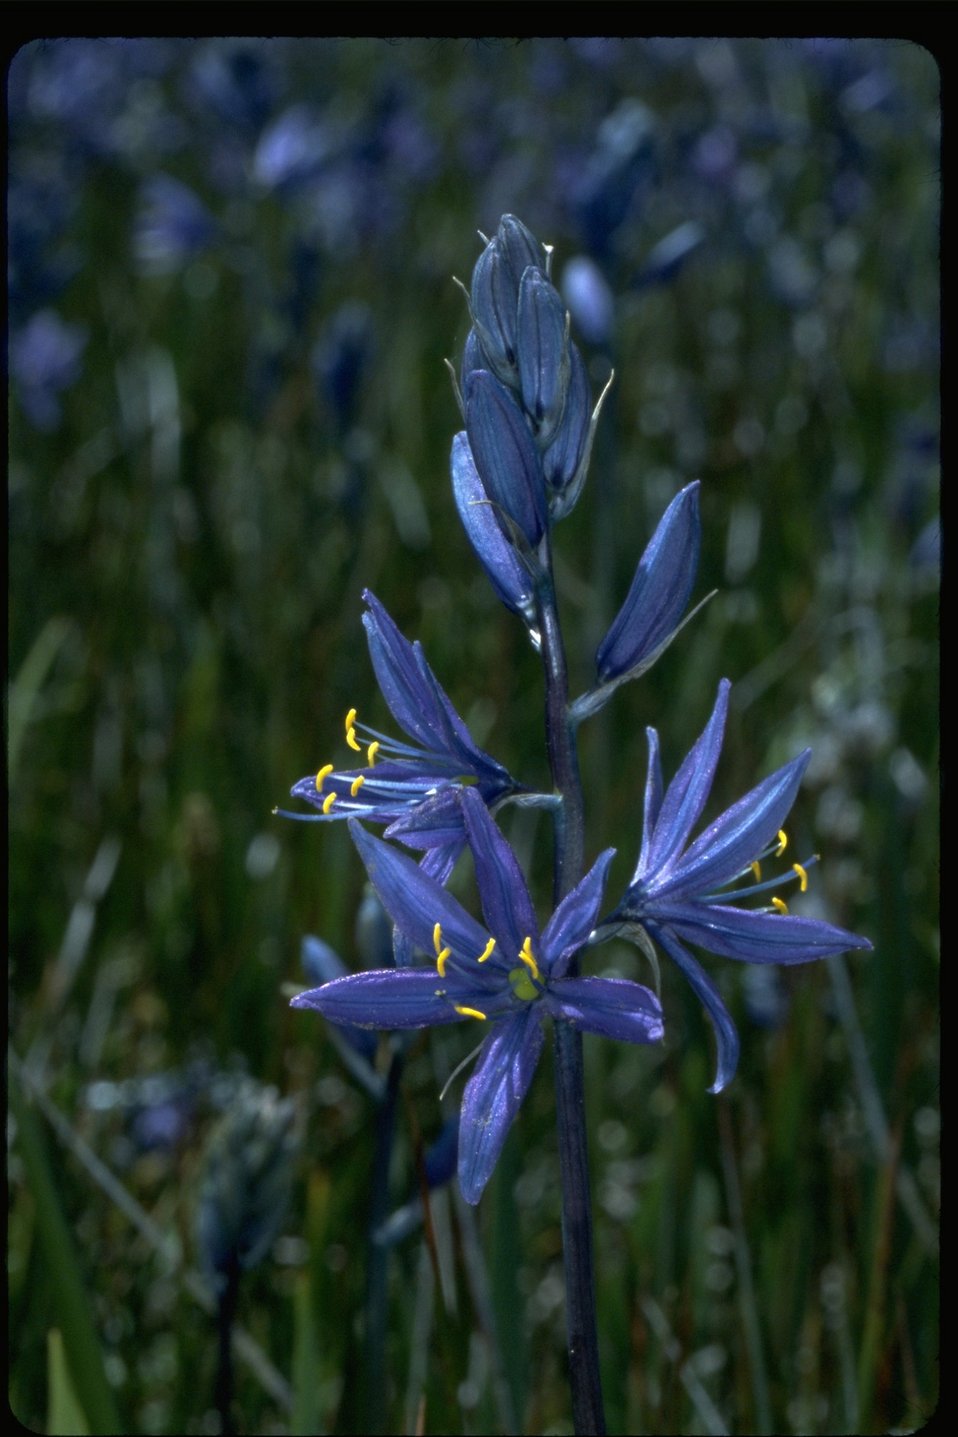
Close up of Blue Camas.